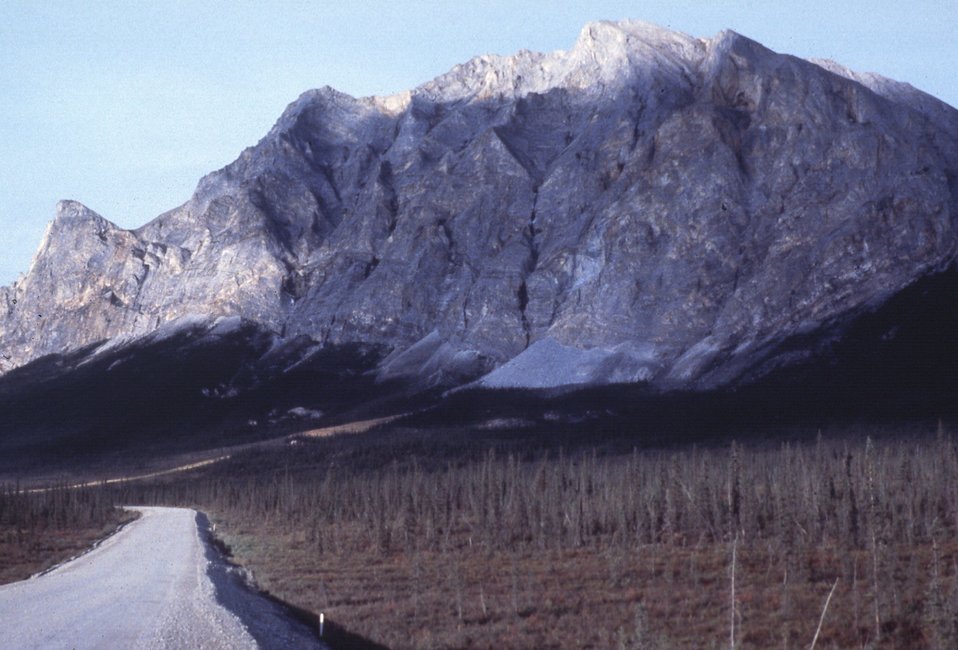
Sukakpak Mountain, Dalton Highway, Alaska